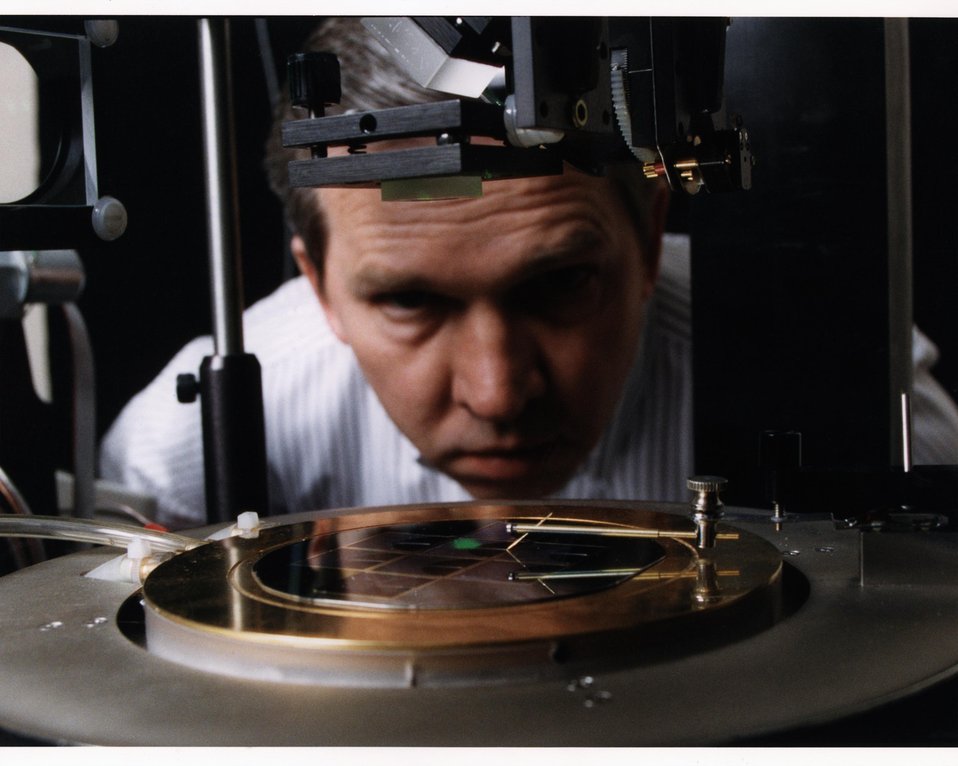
SCIENTIST EXAMINES A PHOTO CELL LASER TEST.

SANDIA'S PHOTOVOLTAIC DEVICE MEASUREMENT LABORATORY SUPPORTS THE U.S. PHOTOVOLTAIC INDUSTRY AND OTHER TESTING ORGANIZATIONS WITH THE FOLLOWING CAPABILITIES: STANDARDIZED LIGHT AND DARK CURRENT-VOLTAGE MEASUREMENTS, OPTICAL MEASUREMENTS, LASER BEAM INDUCED CURRENT SCANNING, SPECTRAL RESPONSE/LASER SCANNING SYSTEM, CALIBRATIONS FOR PHOTOVOLTAIC REFERENCE CELLS, AND DATA ANALYSIS.